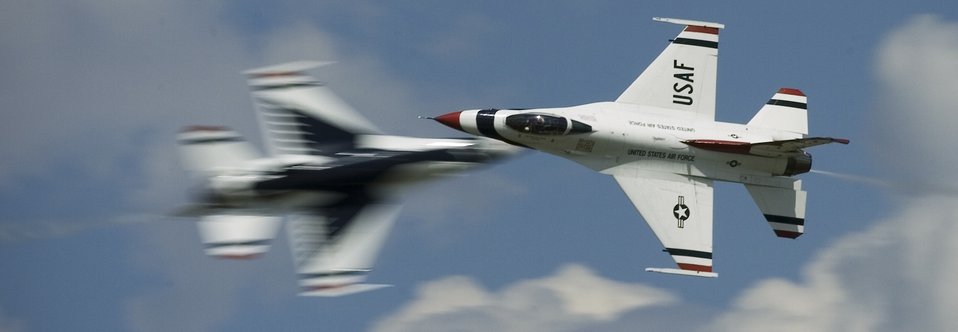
Offutt Airmen hold airshow

Pilots of the Air Force Demonstration Squadron